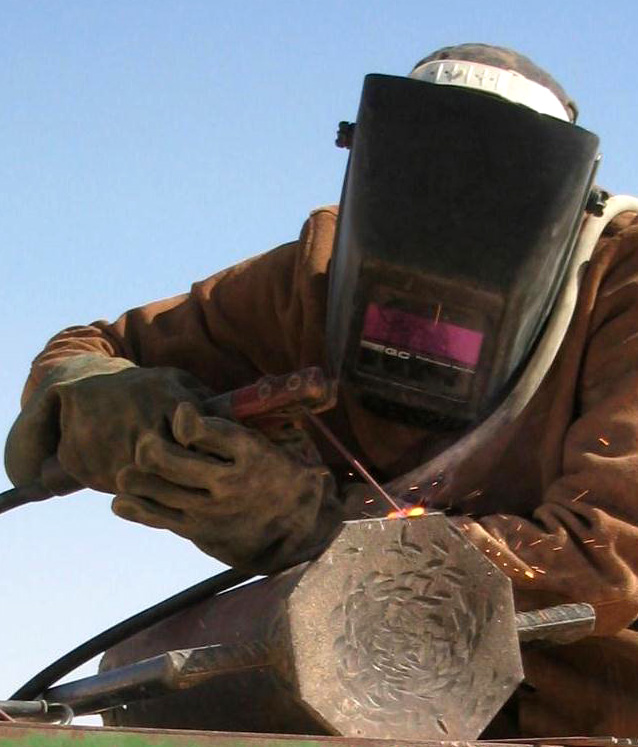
Repair job

OPERATION IRAQI FREEDOM - Airman 1st Class Richard Page repairs a picket driver used for installation of concertina wire at a desert air base. Page, a civil engineering structures specialist from Davis-Monthan Air Force Base, Ariz., is with the 444th Air Expeditionary Group supporting Operation Iraqi Freedom.